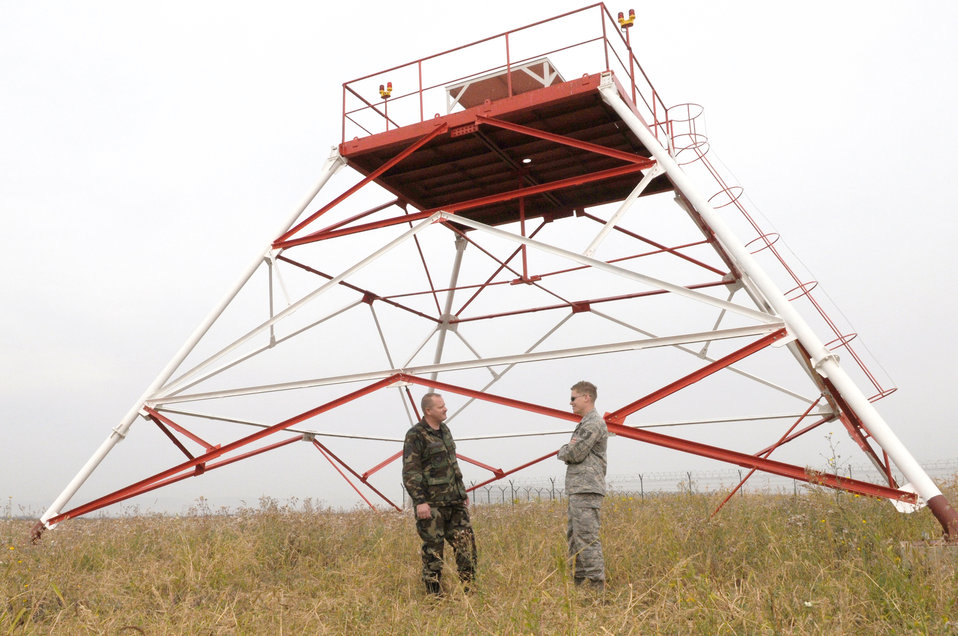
Ramstein Airmen complete site survey for future tactical air navigation system

Master Sgt. Jerry McDonald and Tech. Sgt. Aaron Tibbits discuss what is needed for the installation of the tactical air navigation system during the final site inspection Sept. 17, 2009, Camp Turzii, Romania. The installation of the TACAN will provide better communication capabilities between the air and ground forces in the area, and it will also help strengthen the bonds between the United States and the host nation. Sergeants McDonald and Tibbits are 1st Communications Maintenance Squadron special communications team members.